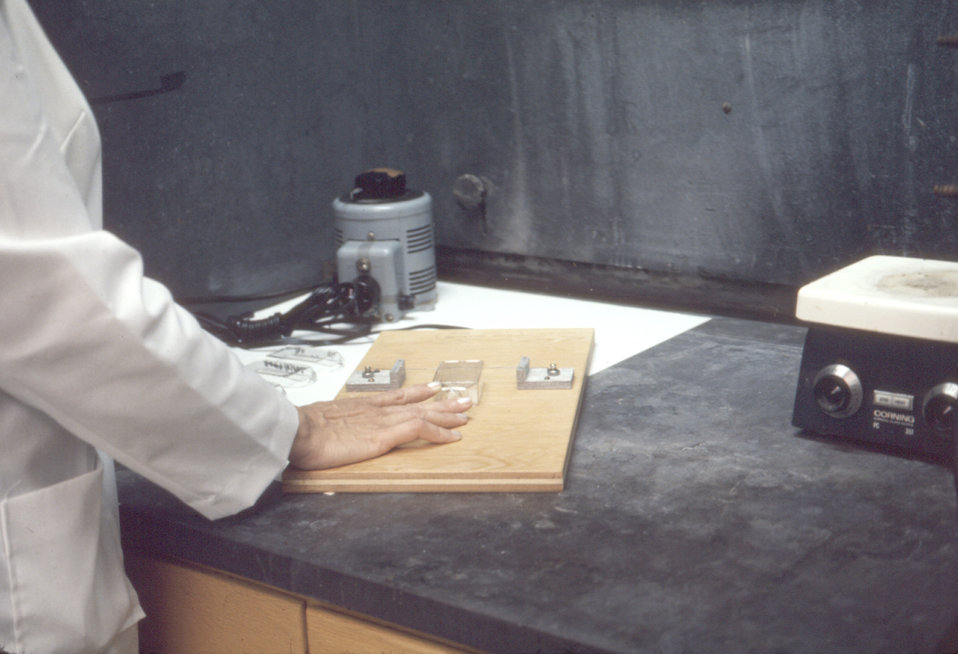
This laboratorian is demonstrating the removal of a Falcon� Flask top with a 'hot' wire during an amniotic fluid test.